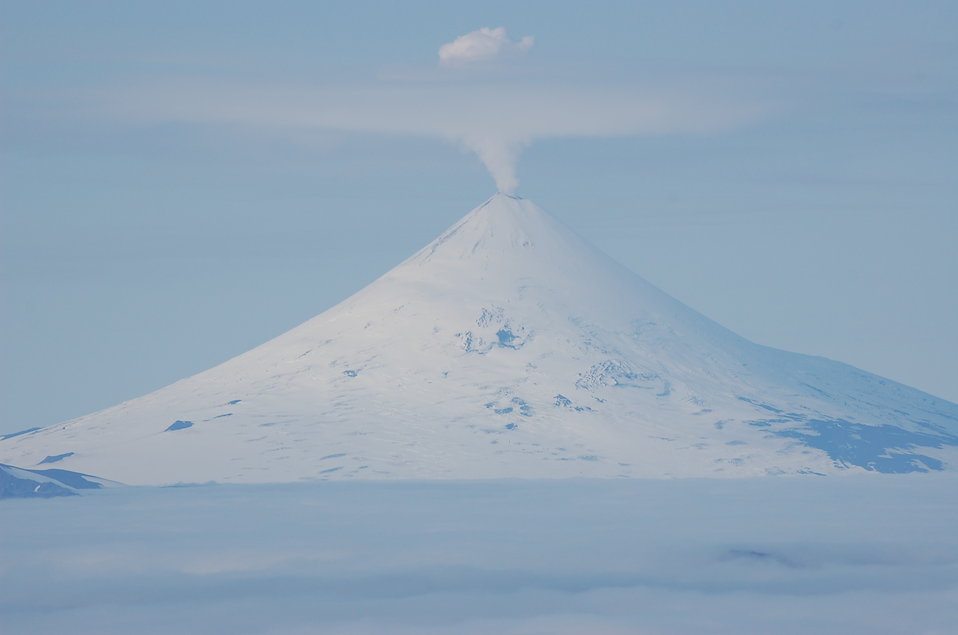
Shishaldin Volcano

Unimak Island, Alaska Maritime National Wildlife Refuge